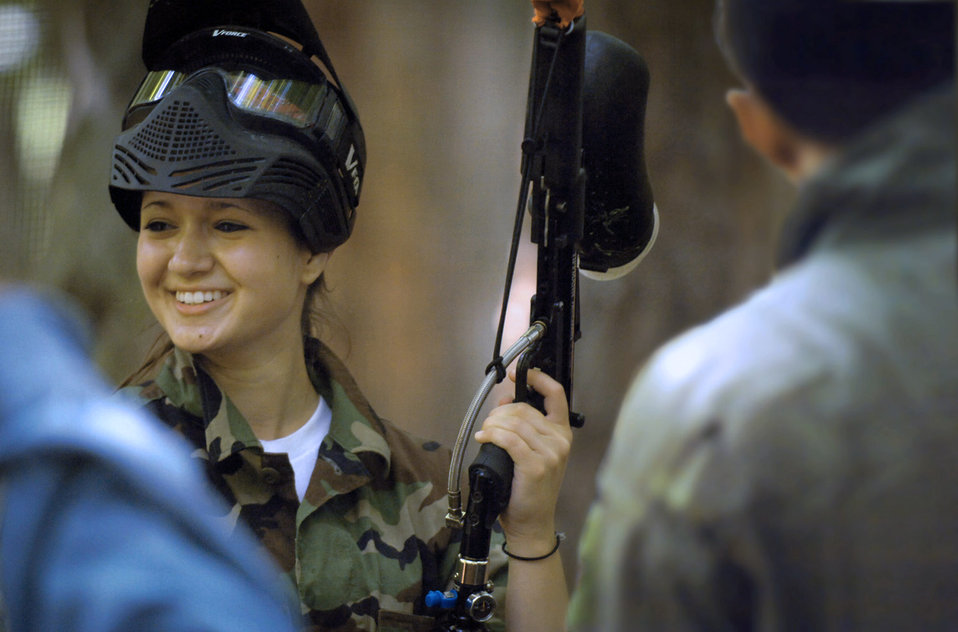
Keystone leadership summit reaches out to USAFE teens

Sixteen-year-old Megan Repetski of Royal Air Force Alconbury, England, chats with fellow European Keystone Club Leadership Summit attendees following a round of paint ball at Vogelweh Military Complex in Kaiserslautern, Germany. More than 100 teens from 11 U.S. Air Forces in Europe bases attended the week long summit at Ramstein Air Base, Germany, from July 28 to Aug. 1.